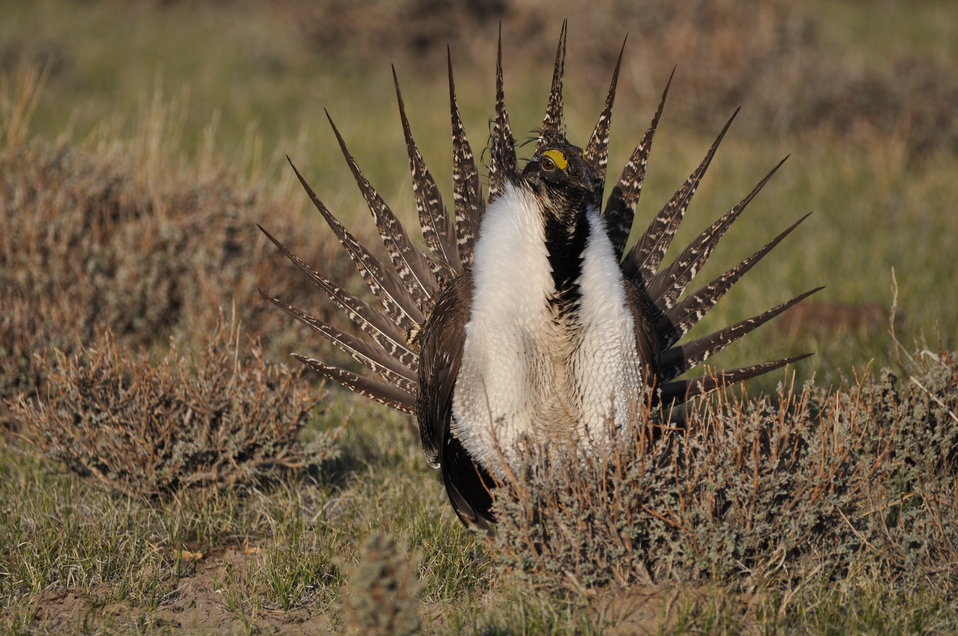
Greater Sage-Grouse

Photo Credit: Jeannie Stafford/USFWS
A greater sage-grouse male struts at a lek (dancing or mating ground) near Bridgeport, CA to attract a mate.